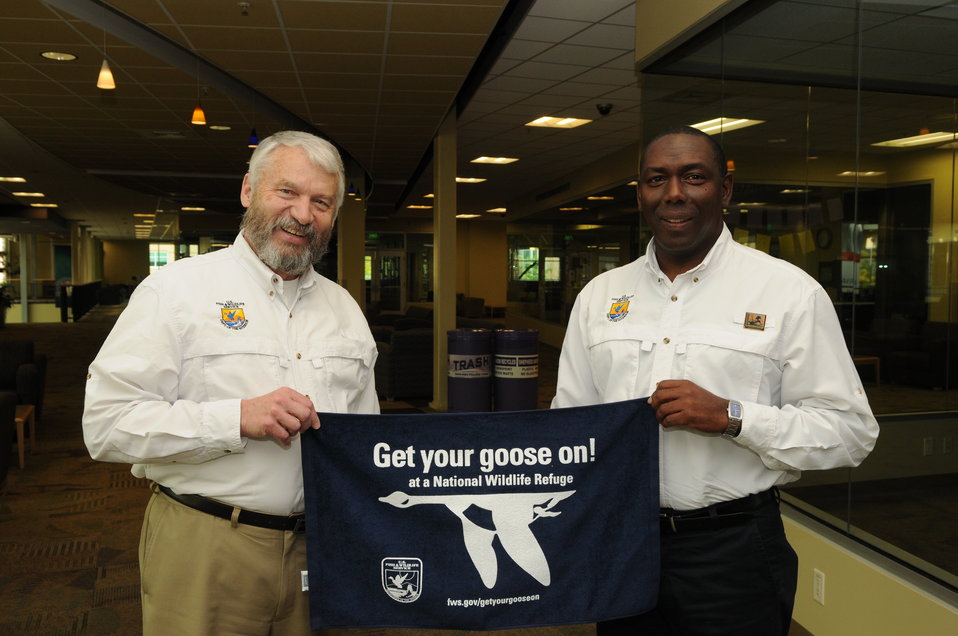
Get your goose on!

The U.S. Fish & Wildlife Service sponsored the 2012 Federal Duck Stamp Art Contest September 28 and 29 in Ogden, Utah, at Weber State University. A panel of five judges was responsible for choosing the art work used to design the 2013-2014 Migratory Bird Hunting and Conservation Stamp.